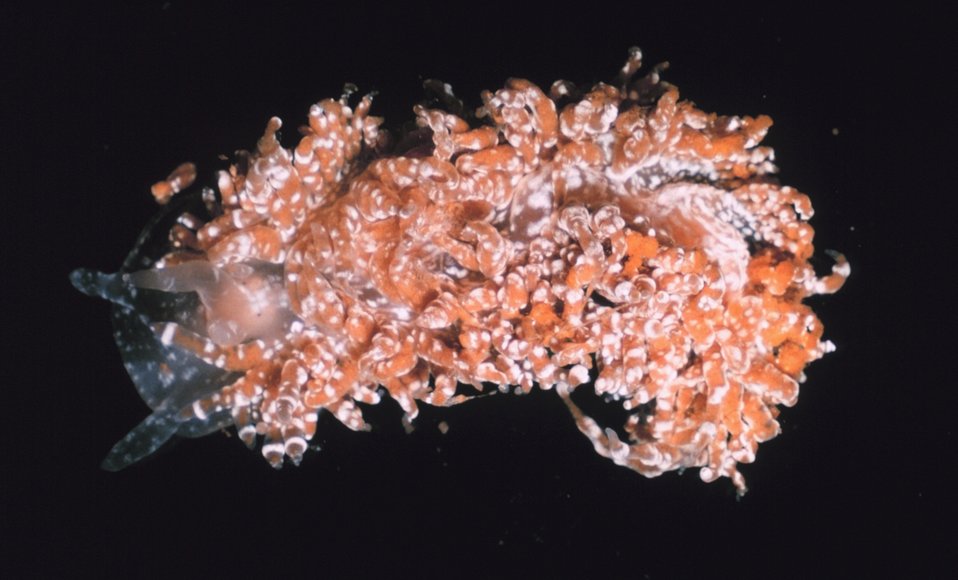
Nudibranch